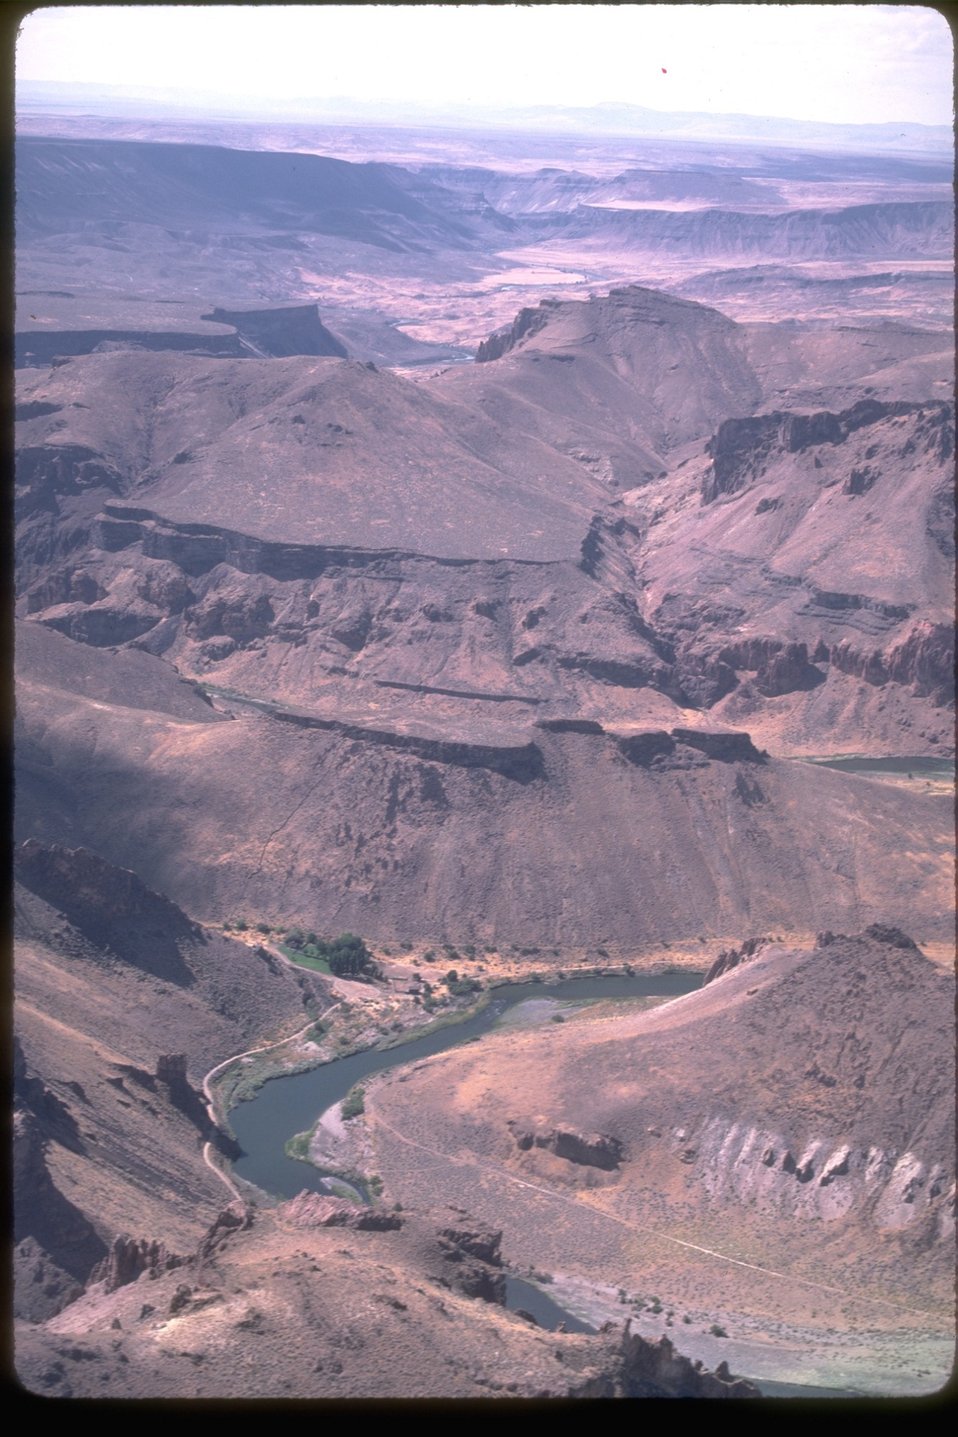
Scenic view of the Owyhee River. OR 3-59